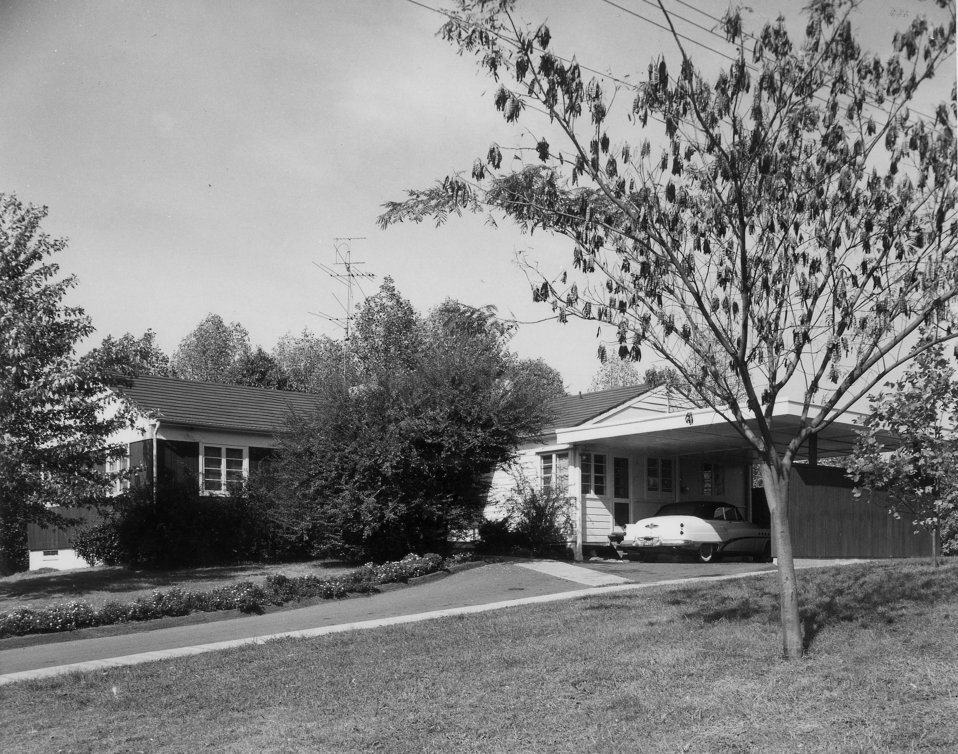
F House Oak Ridge